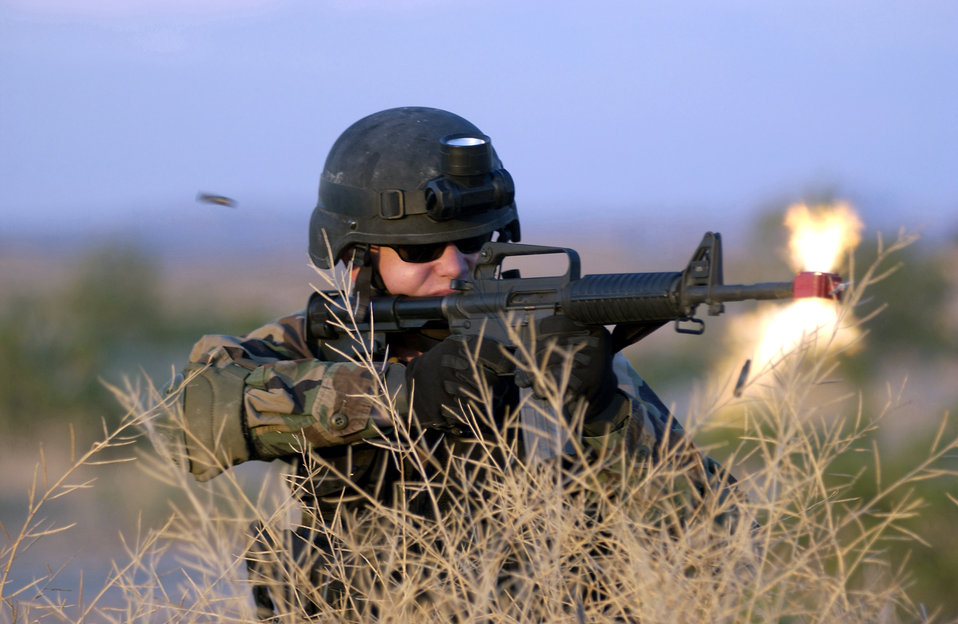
War games

NELLIS AIR FORCE BASE, Nev. -- Senior Airman Dan Solon fires at opposing forces during a training exercise here. The three-day exercise included training on first aid, convoys and map reading to help prepare Airmen for deployment. Airman Solon is assigned to the 99th Civil Engineer Squadron's explosive ordnance disposal flight.